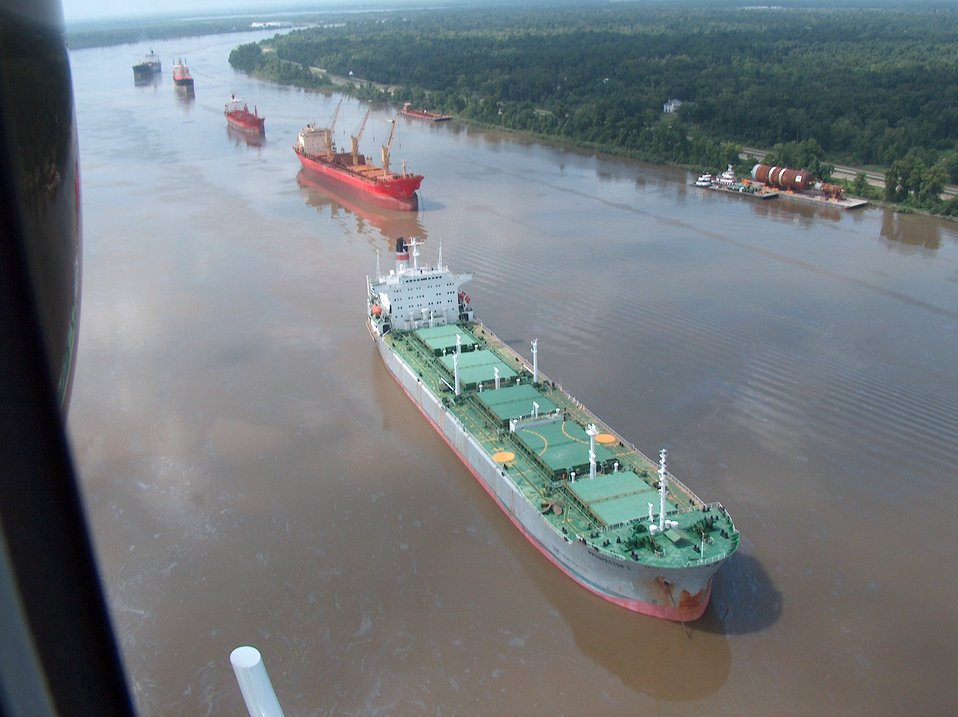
A few of the 70 or so vessels waiting to transit the Mississippi River following the collision of a fuel barge and a chemical tanker resulting in the spill of 419000 gallons of oil. Over 85 miles of the river was closed to traffic during the incident.